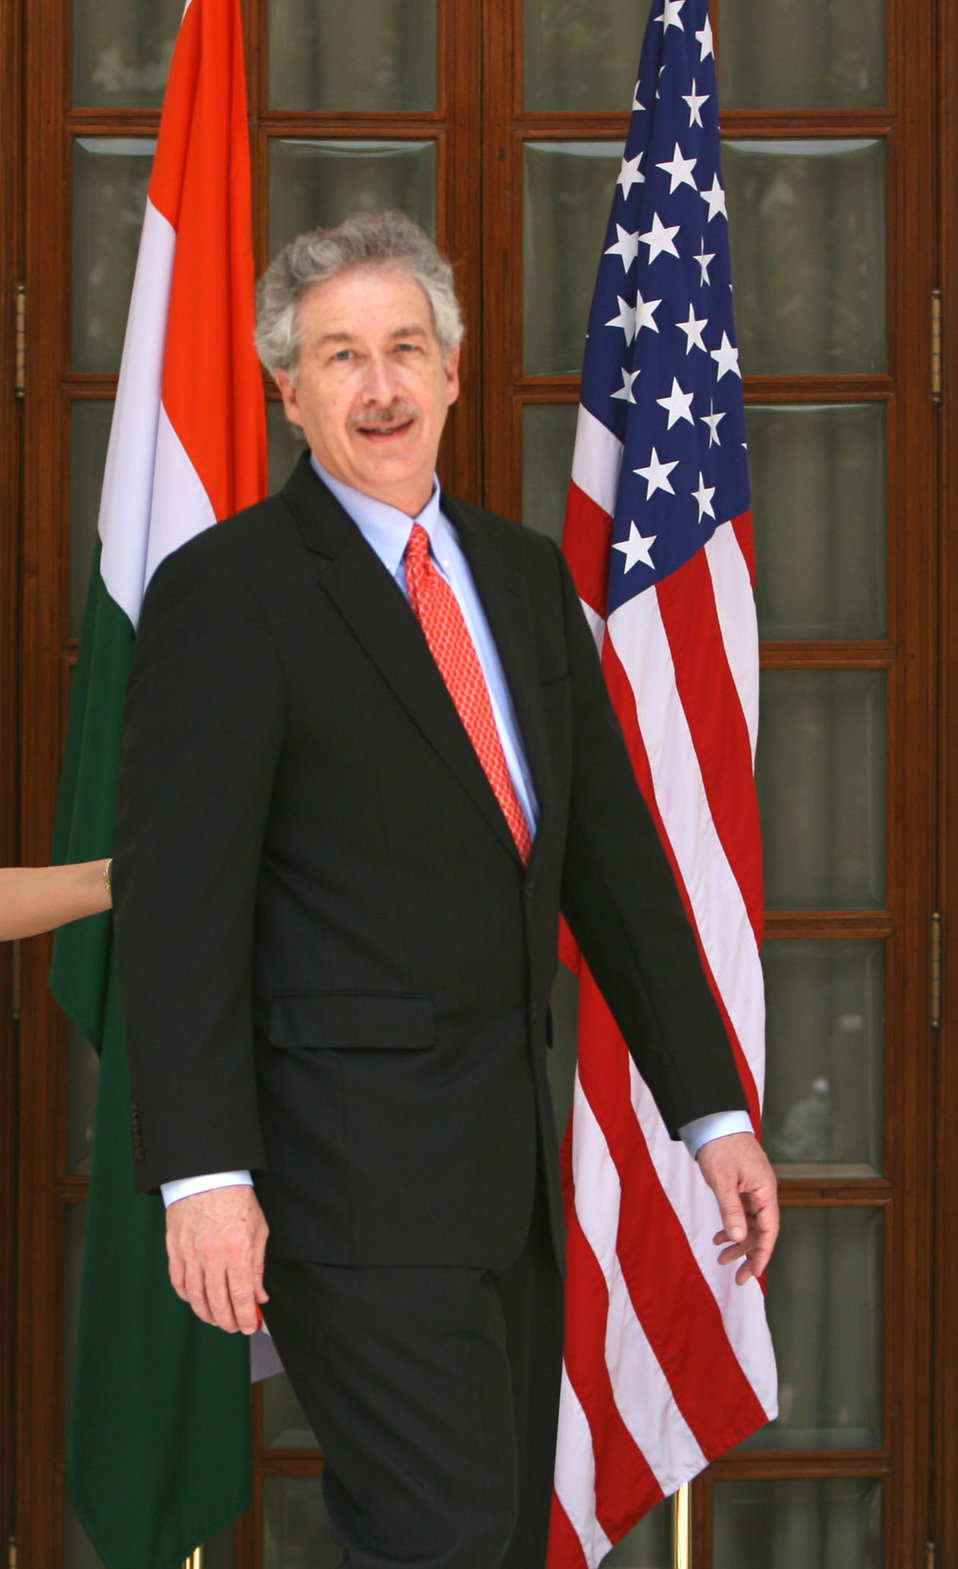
Under Secretary Burns Visits India

Under Secretary for Political Affairs William J. Burns visits New Dehli, India, May 24, 2010.